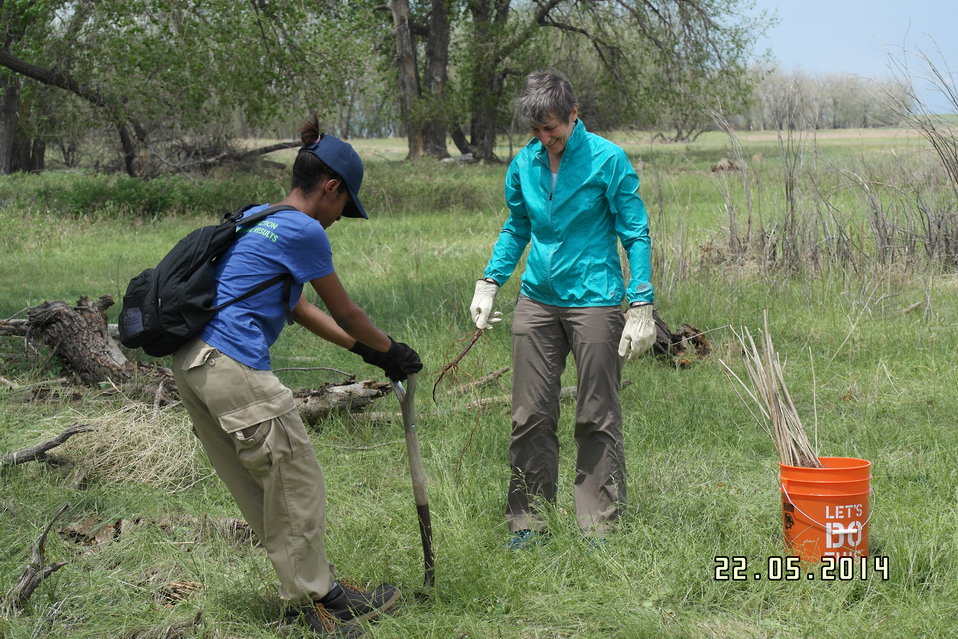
Secretary Jewell Announces $6.7 for Youth Conservation Job

Interior Secretary Sally Jewell helps local youth conservation groups plant cottonwood trees at Rocky Mountain Arsenal National Wildlife Refuge.